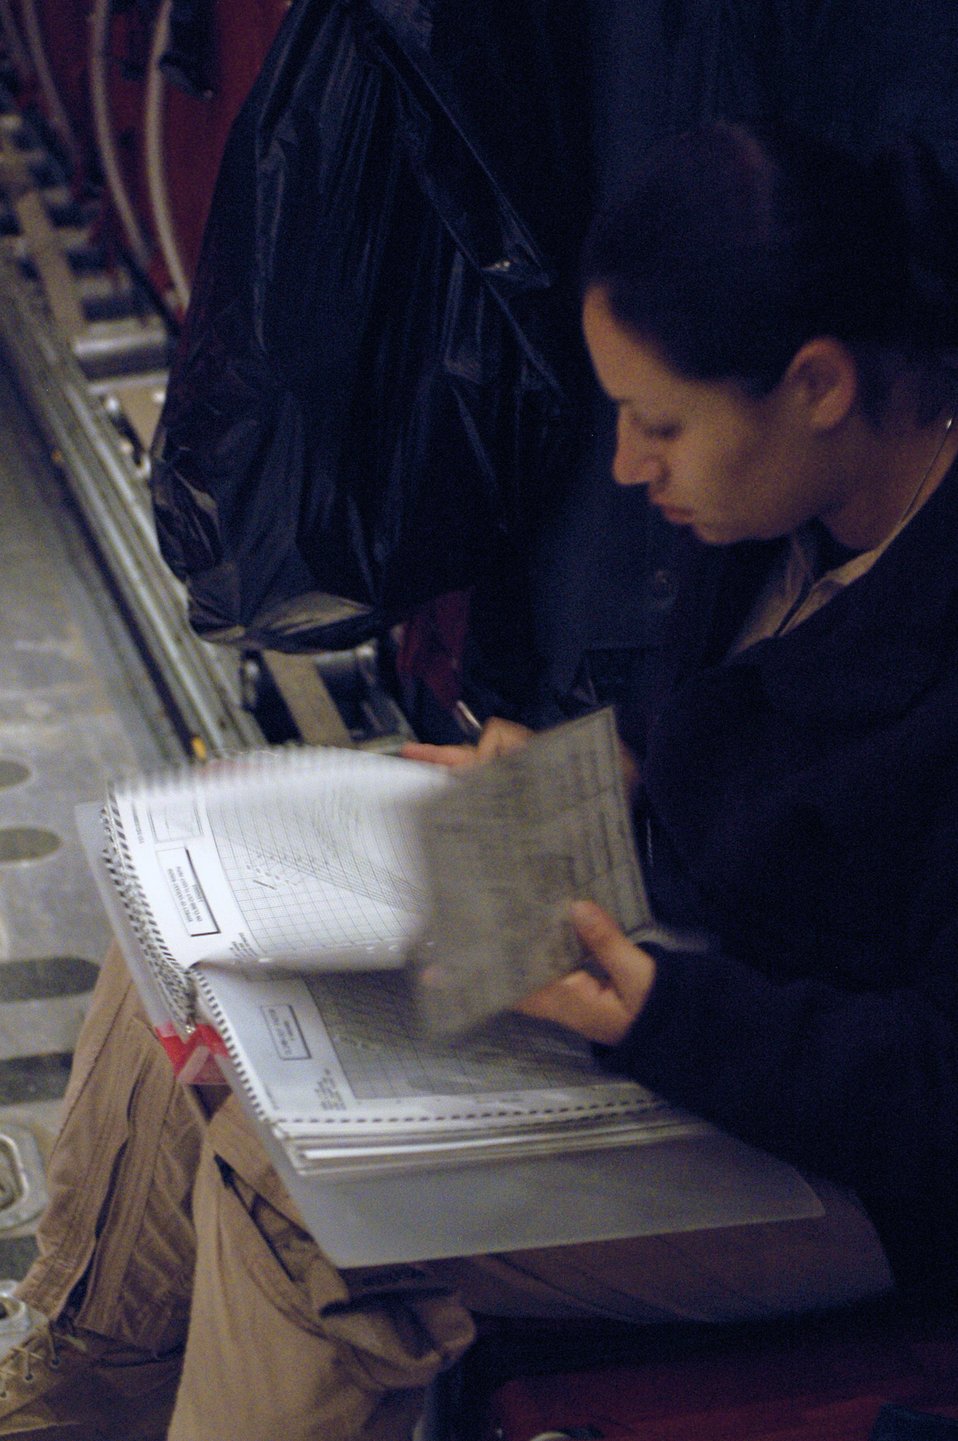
Airmen perform leaflet drop over Afghanistan

Staff Sgt. Amanda Murdock documents C-130 Hercules maintenance forms during a brief refueling stop in October in Southwest Asia. The aircraft crew dropped 300,000 leaflets over an area of Afghanistan. Sergeant Murdock is a 40th Expeditionary Airlift Squadron flight engineer.